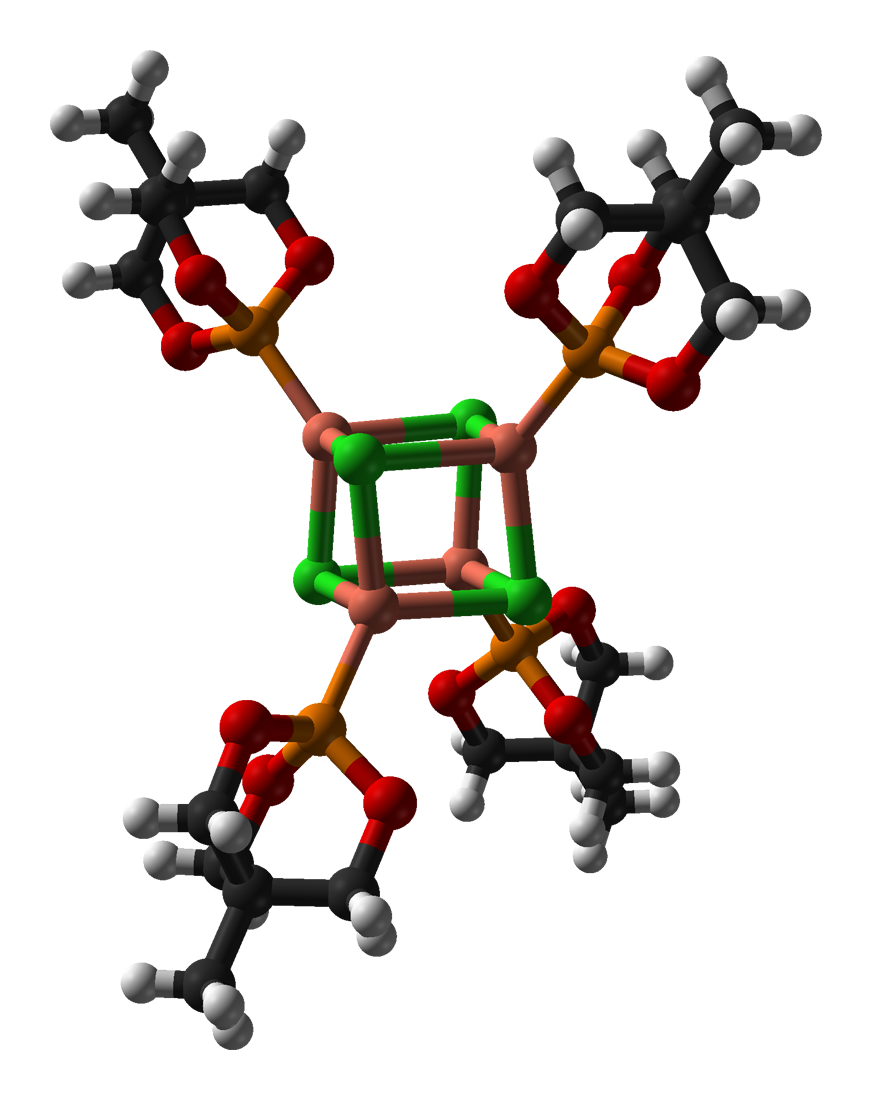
Ball-and-stick model of the caged phosphite complex [CuCl(MeCage)]4 as found in the crystal structure. Colour code: Carbon, C: black Hydrogen, H: white Phosphorus, P: orange Oxygen, O: red Copper, Cu: orange-pink Chlorine, Cl: green Crystal structure by X-ray diffraction from J. Chem. Cryst. (2003) 33, 341-347. Model constructed in CrystalMaker 8.1. Image generated in Accelrys DS Visualizer.